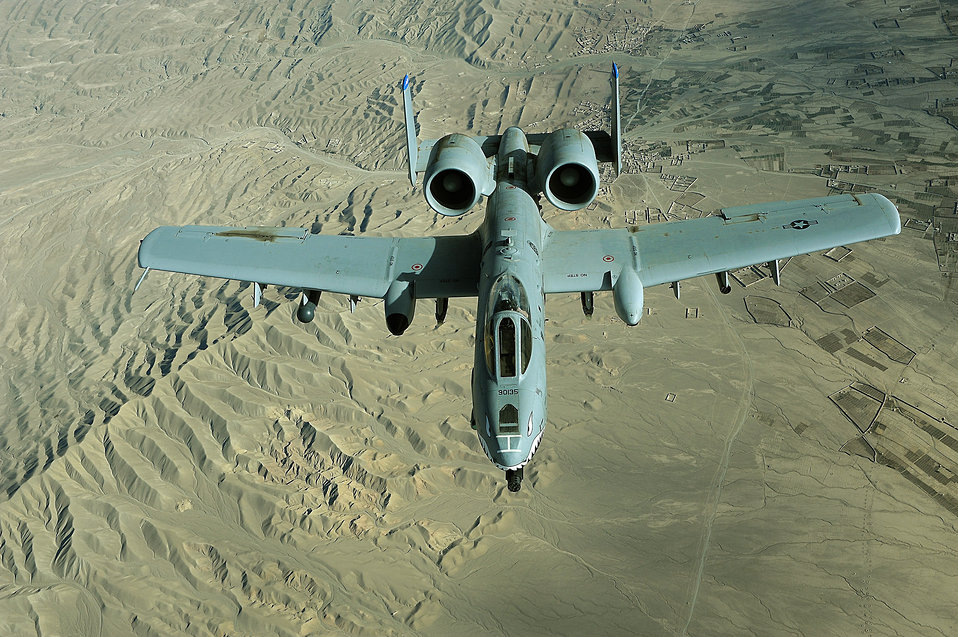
Jan. 23 airpower summary: A-10s protect coalition forces

An A-10 Thunderbolt II provides top cover over Afghanistan in support of Operation Enduring Freedom. A-10s perform shows of force to deter enemy activities and provide armed aerial overwatch for coalition ground forces.